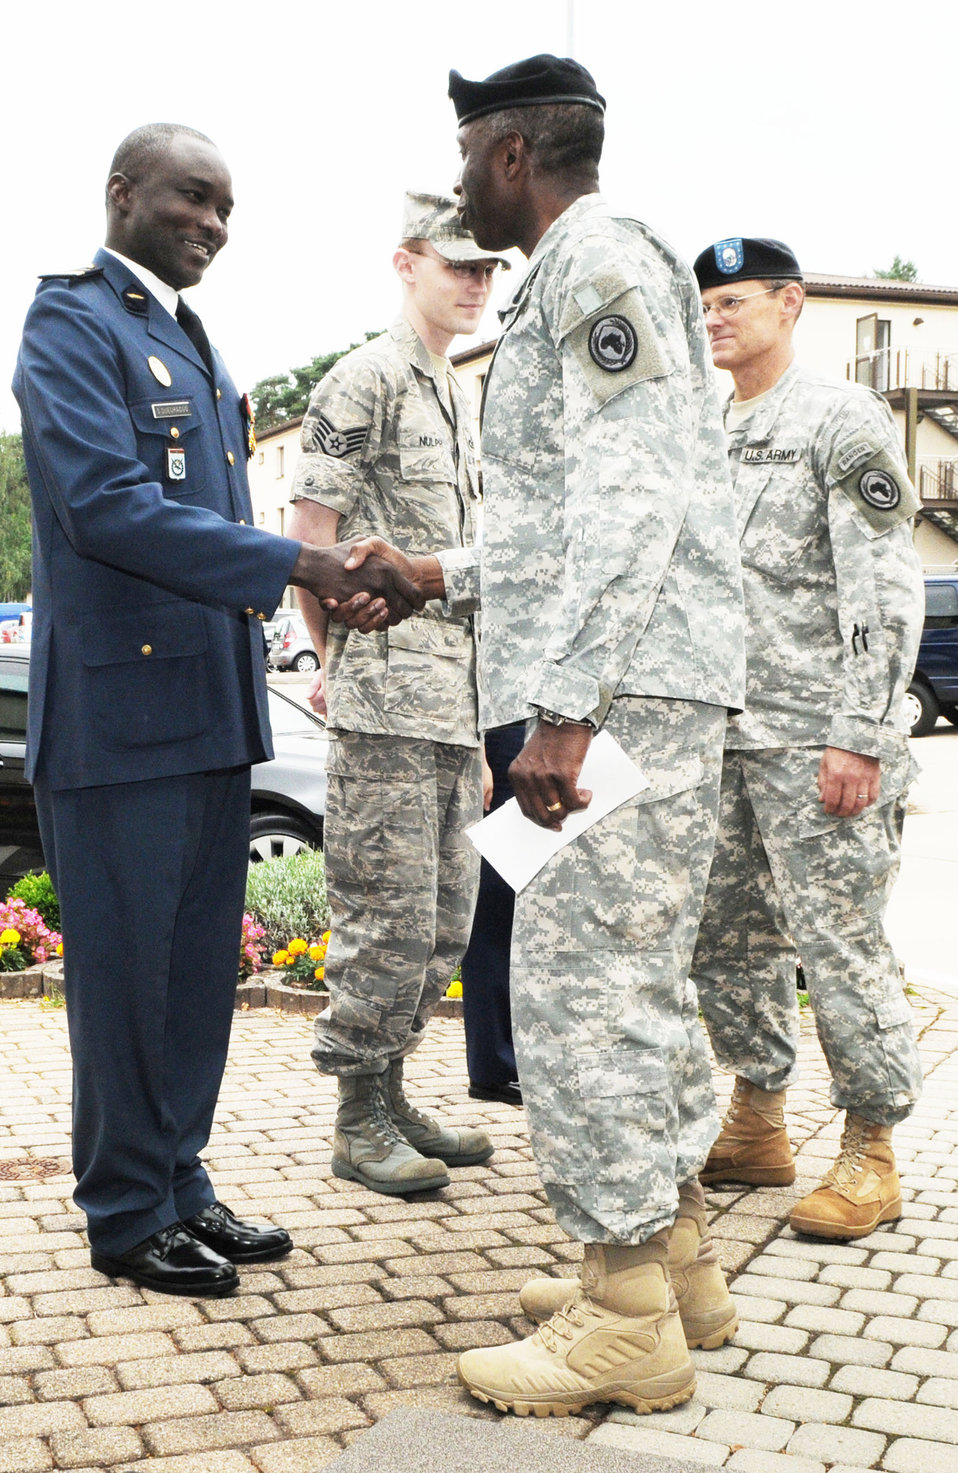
17th Air Force officials host military exchange from Africa

Army Gen. William